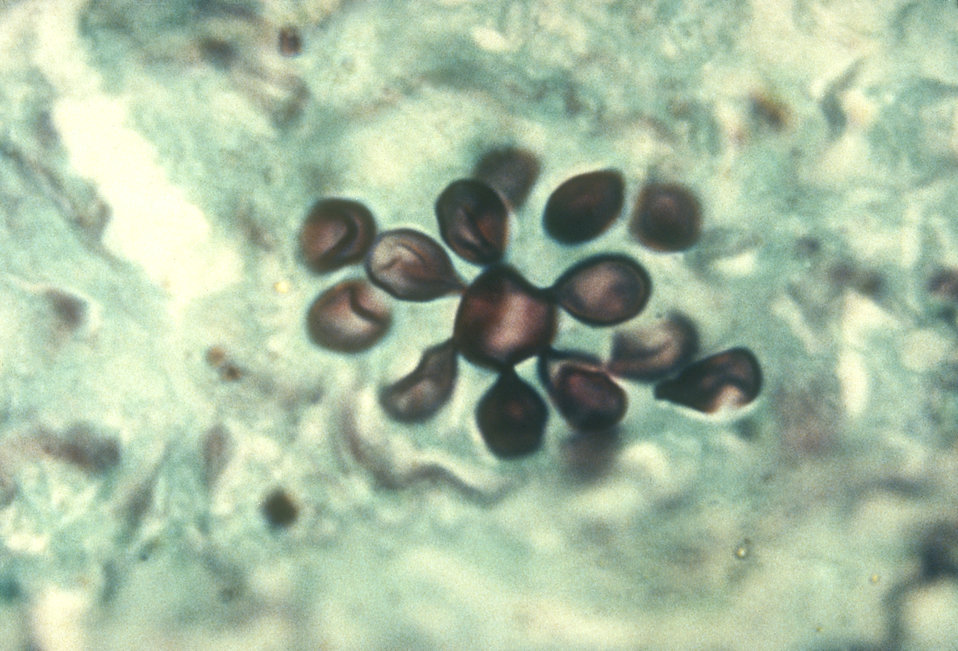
Histopathology of paracoccidioidomycosis.